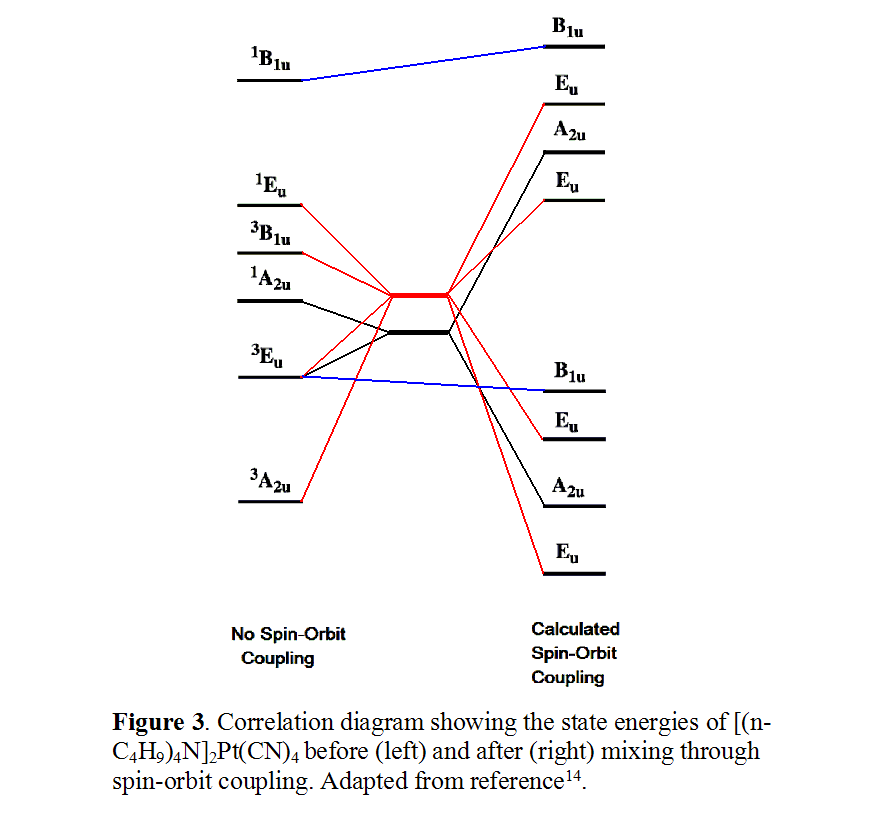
An example of Magnetic circular dichroism